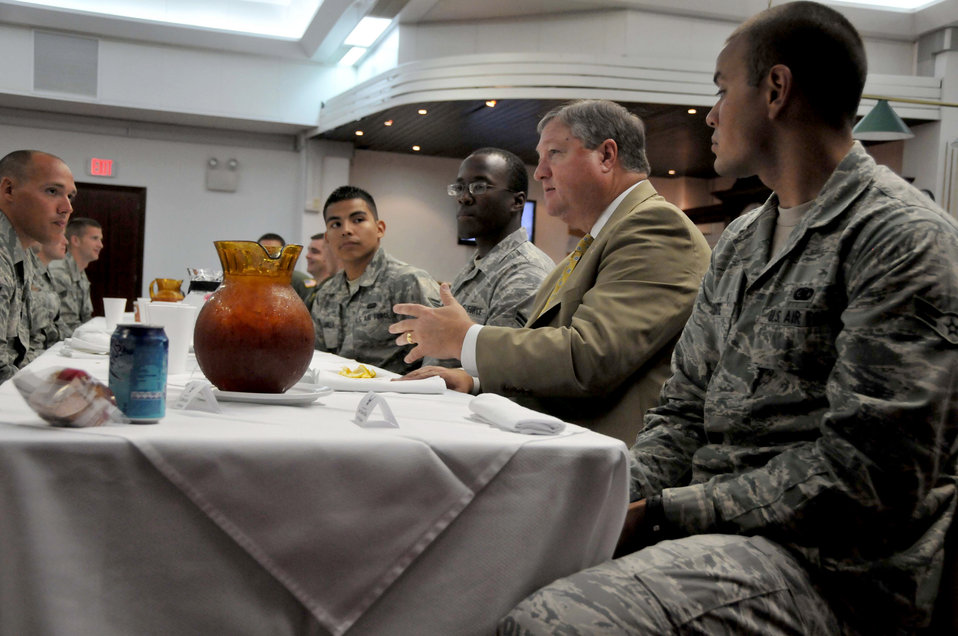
SecAF

Secretary of the Air Force Michael Donley answers questions during a lunch with Airmen from the 496th Air Base Squadron June 17, 2011, in Western Europe.